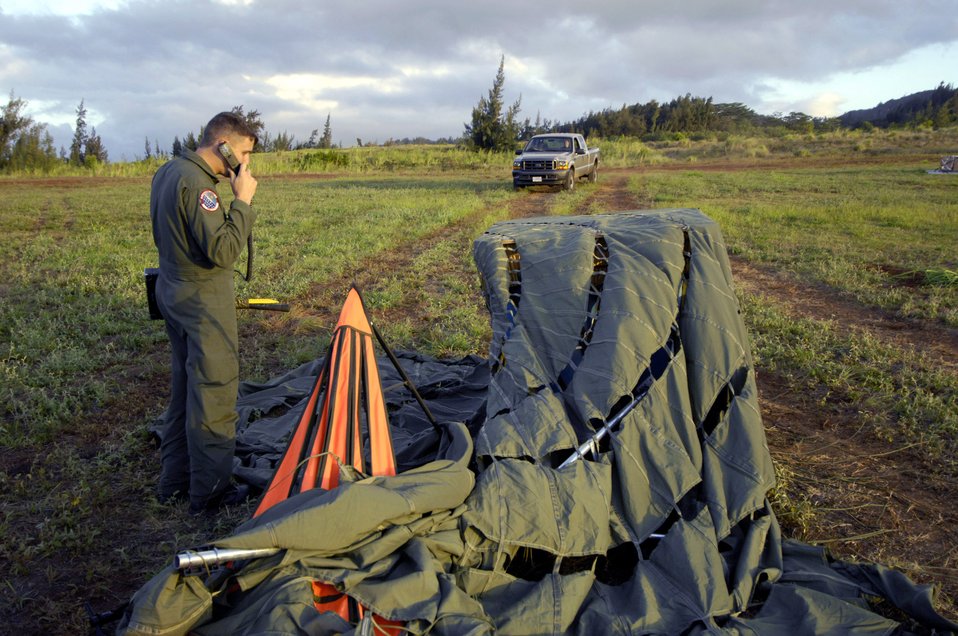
Load 'em up, drop 'em out

Tech. Sgt. Ken Bragg relays the landing position of a practice bundle to pilots of a C-17 Globemaster III during quarterly airdrop qualifications June 11 at the Kahuku Training Range in Hawaii. Sergeant Bragg is loadmaster and drop zone control officer with the 535th Airlift Squadron at Hickam Air Force Base.